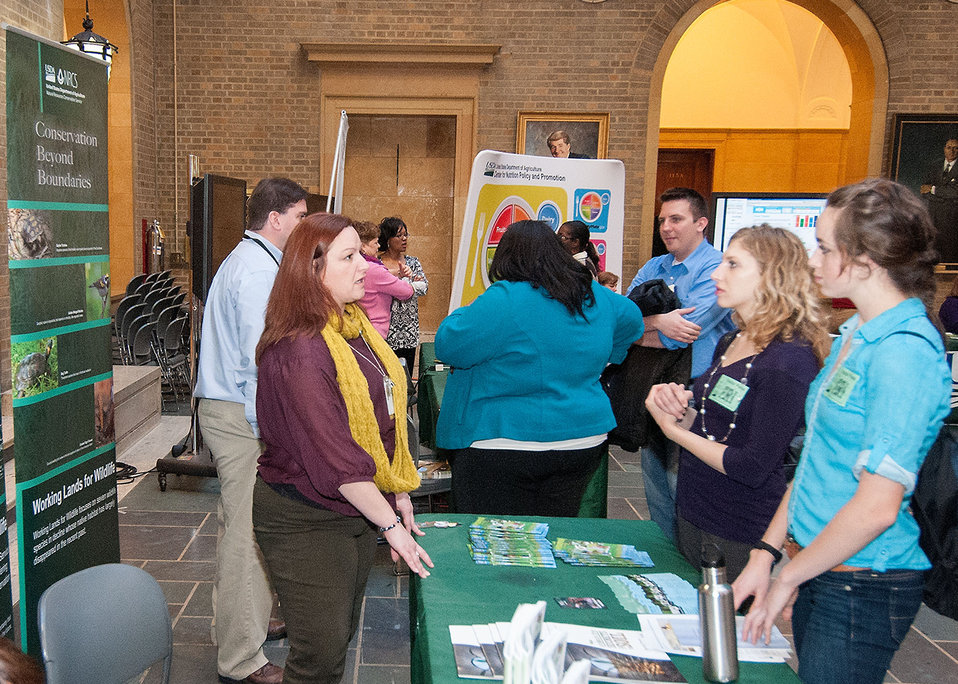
Sarah Maxwell explains the soil and water conservation programs of the Natural Resources Conservation Service (NRCS) to Amy Lesperance and Anya Gandy from the National Farmers Union at the U.S. Department of Agriculture (USDA) Open House on the National Mall, in Washington, D.C., on Friday, Jan. 18, 2013. The Open House was an opportunity to learn more about USDA’s role in agriculture, local and regional food systems, natural resource conservation, nutrition, research and rural development.